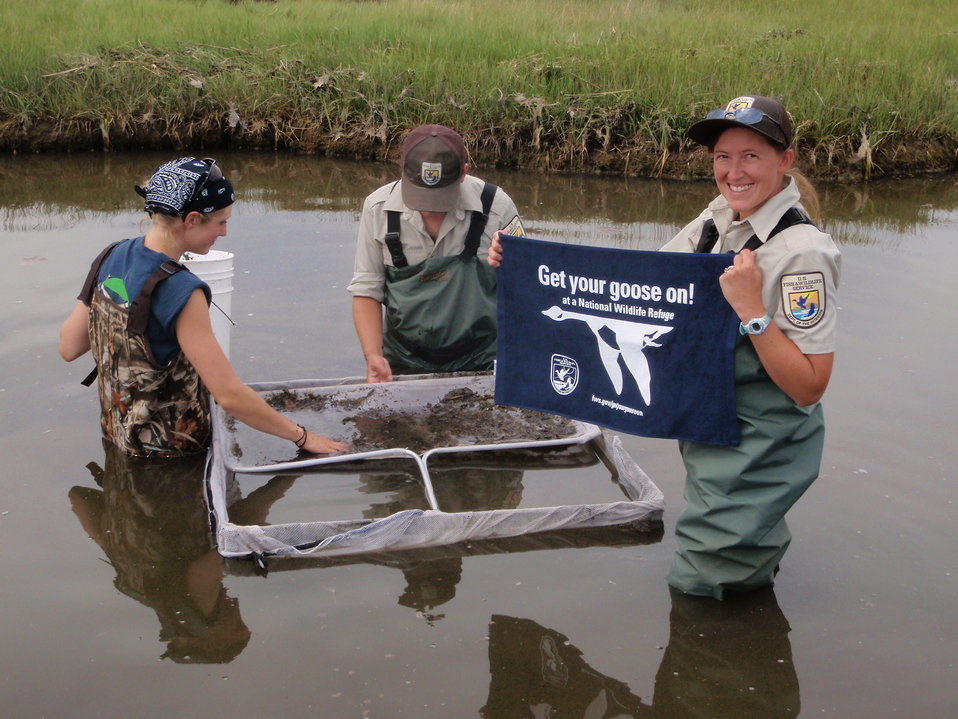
Get Your Goose On!

Nekton sampling during SMI training... GYGO!